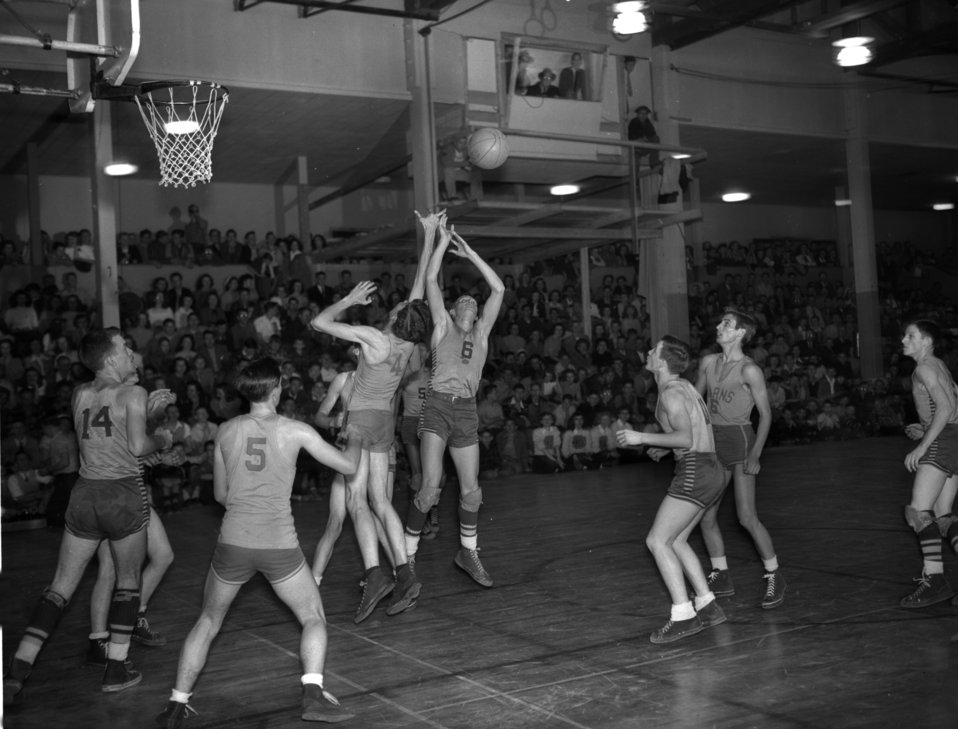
High School Basketball

004305 DOE photo by Ed Westcott
Oak Ridge Tennessee 2-6-1948